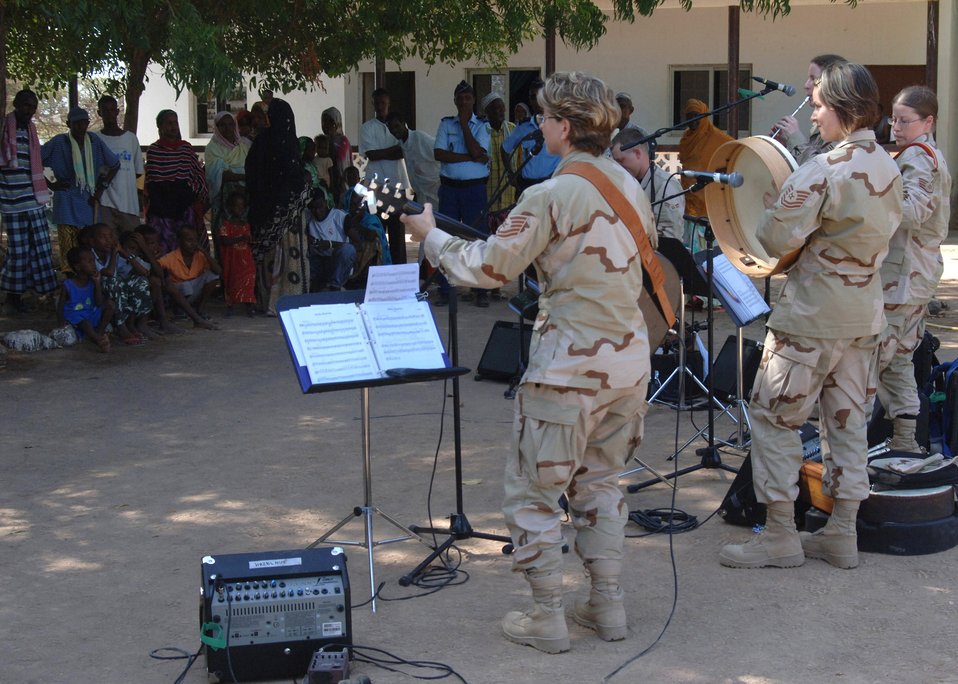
CENTAF band, Marines entertain Damerjog villagers

The U.S. Central Command Air Forces Expeditionary Band, the